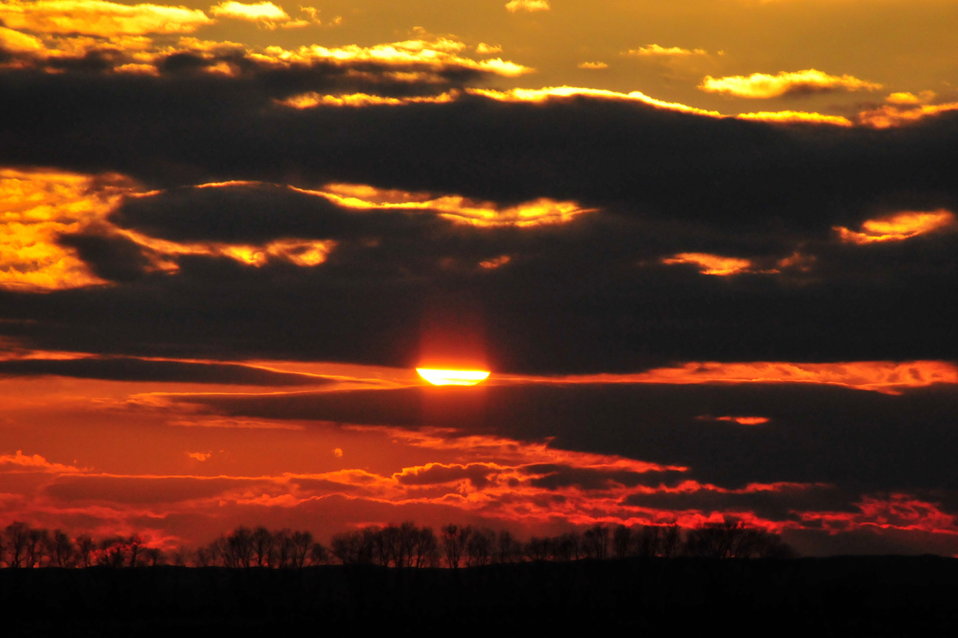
Sunset at Lacreek National Wildlife Refuge

The sun sets over Lacreek National Wildlife Refuge in South Dakota.